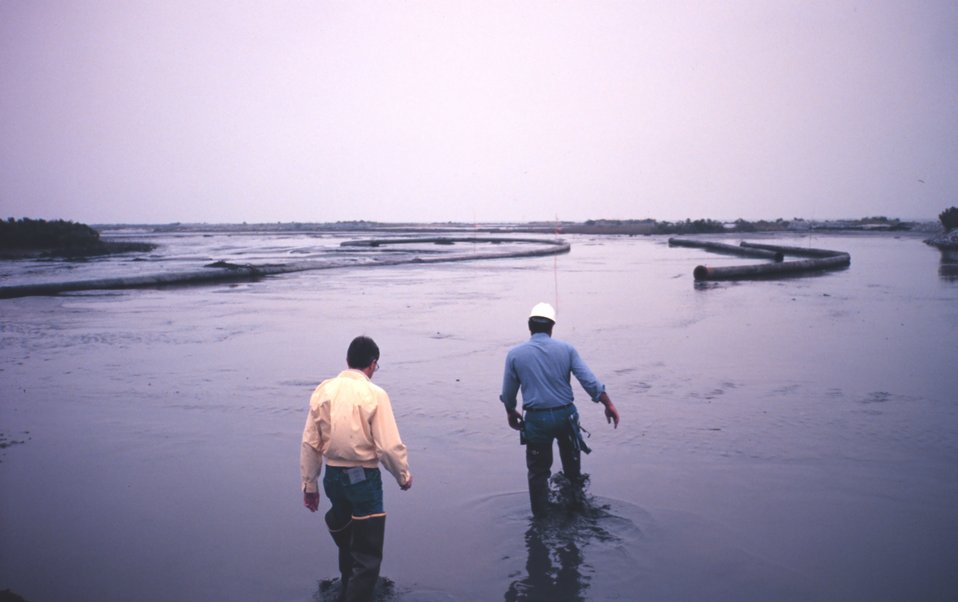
The Greenhill/East Timbalier dredging operation -- walking on newly created land . When it dries it will become marsh land.